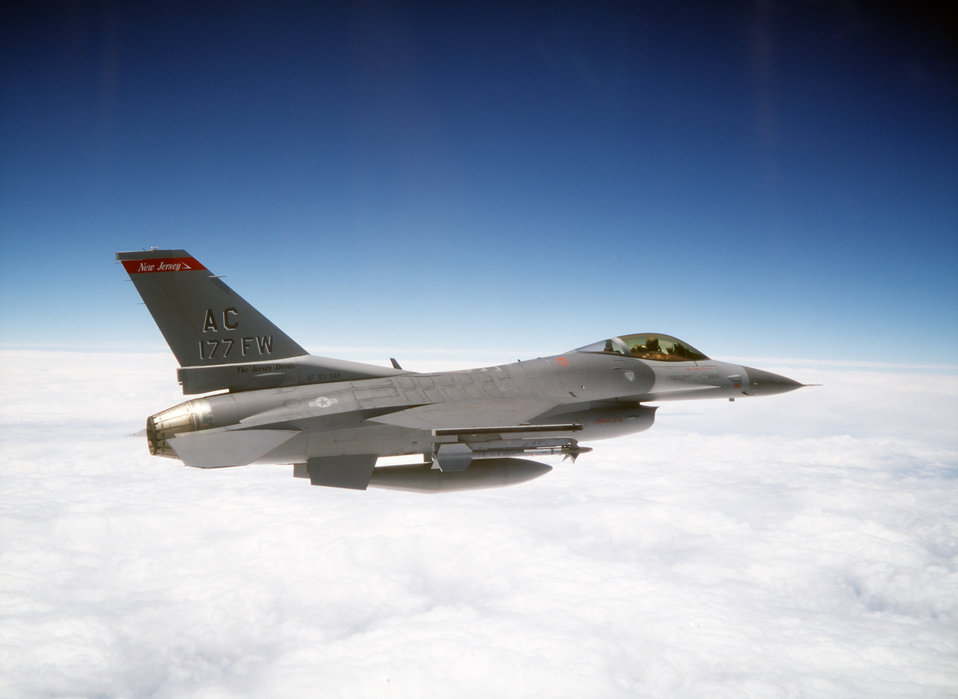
Going home

TYNDALL AIR FORCE BASE, Fla. -- Lt. Col. Mike Cosby, 177th Fighter Wing commander, flies an F-16C block 25 aircraft from here to Atlantic City International Airport, N.J. The wing participated in Combat Archer training at Tyndall.